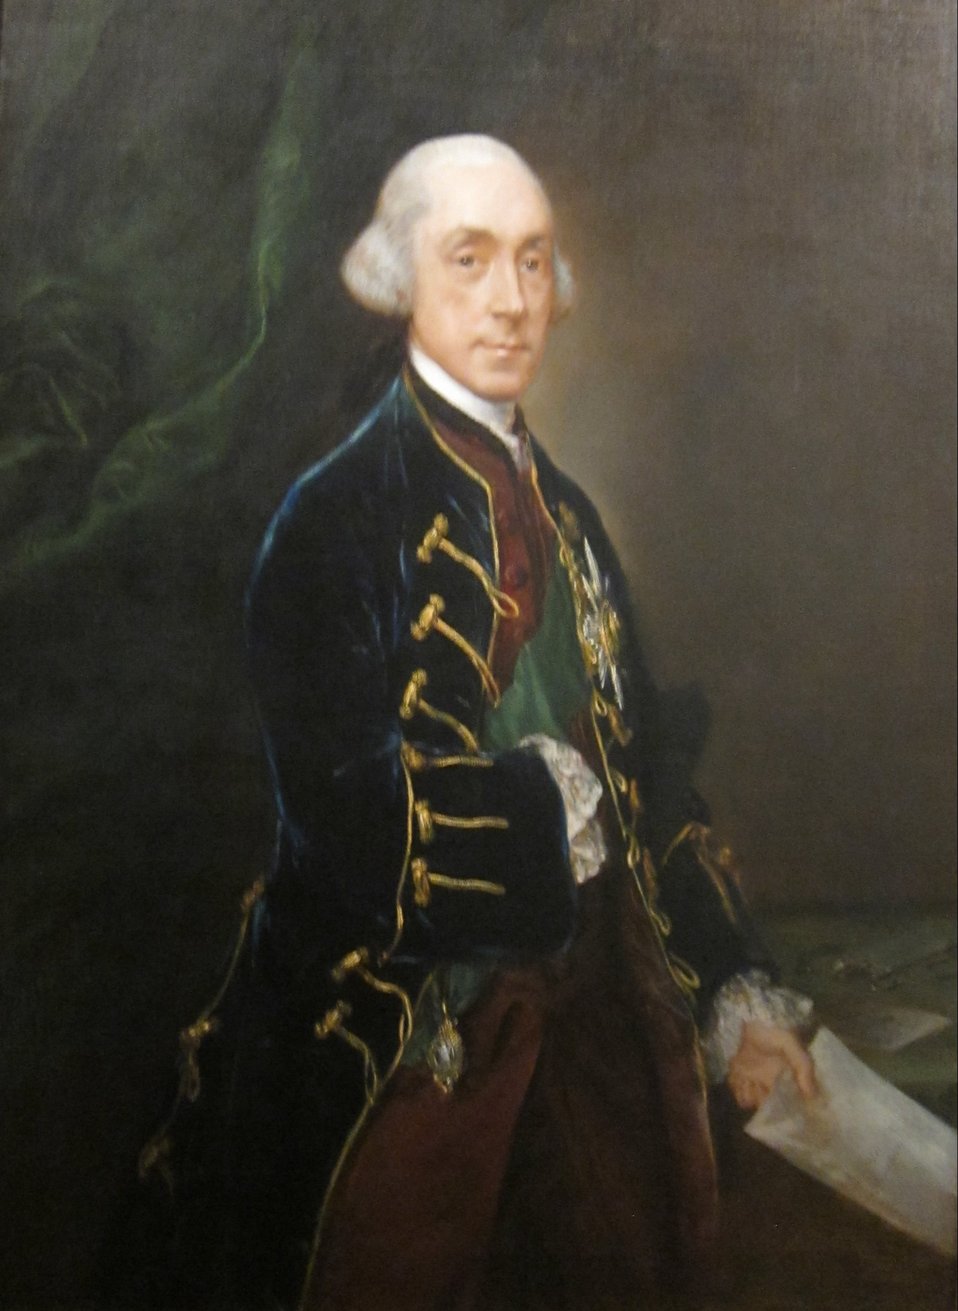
'Francis Greville, 1st Earl of Warwick' by Thomas Gainsborough, Cincinnati